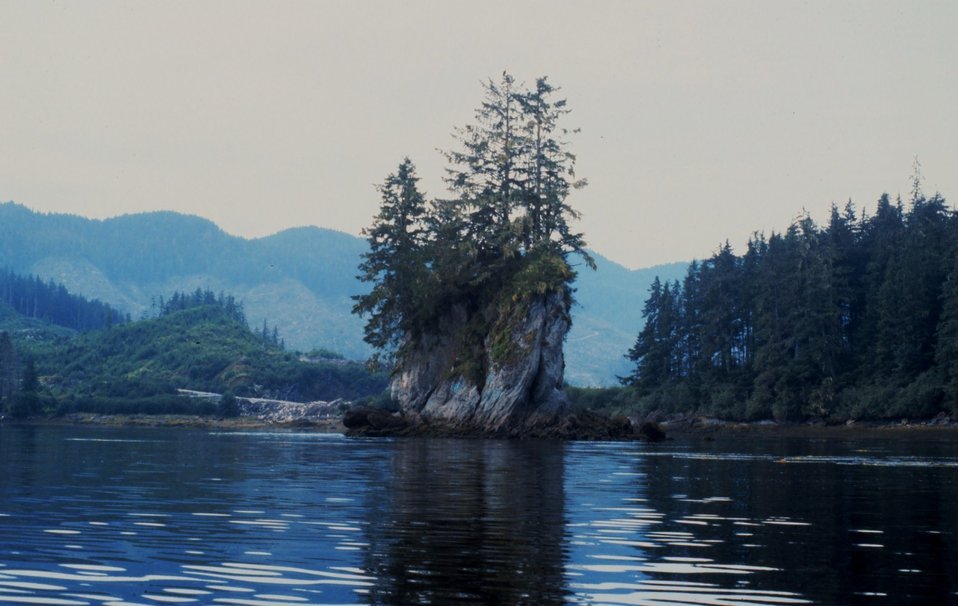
Small islet in Hobart Bay on east side of Stephens Passage